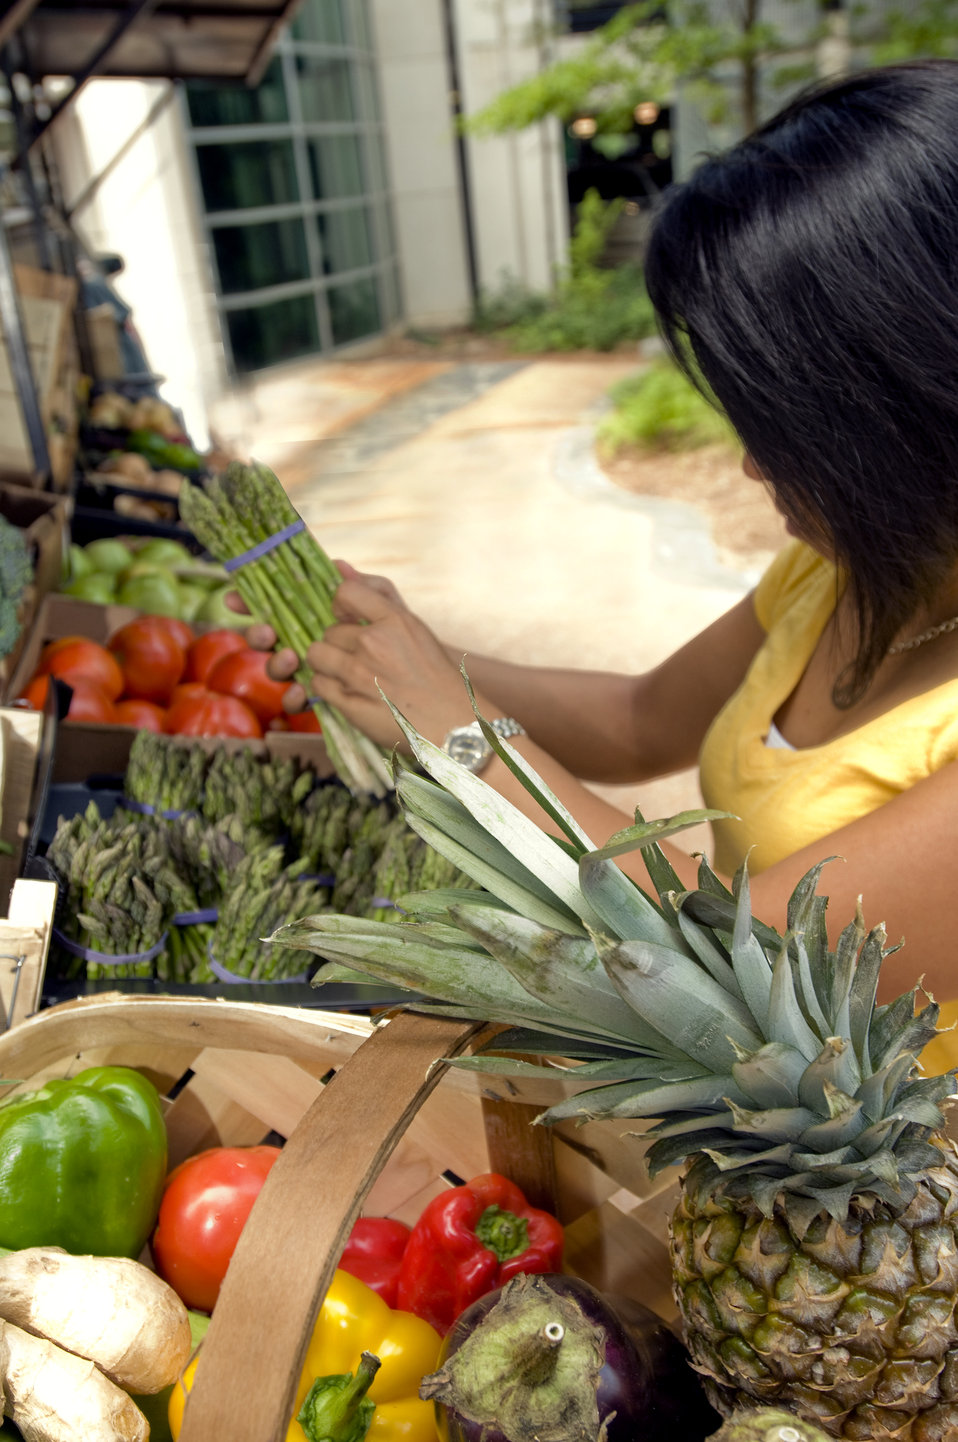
This woman was photographed as she was shopping for groceries at a mobile grocery market at a point in her activity where she was choosing a bunch of green asparagus stalks. Here she'd picked up, and was inspecting a single bunch, which she was holding in her right hand.